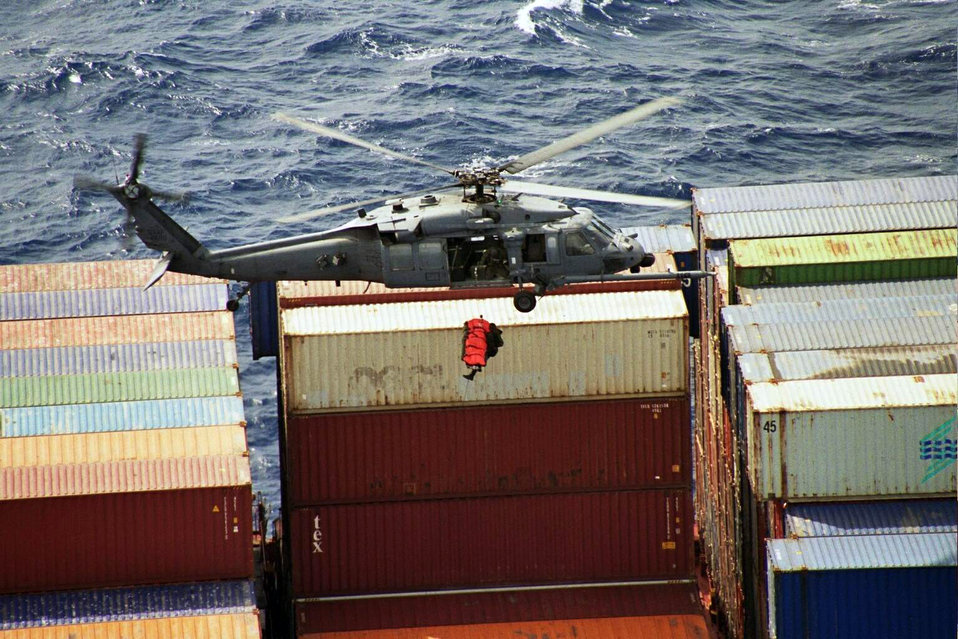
Airmen coordinate joint lifesaving mission off California coast

Pararescuemen from the 131st Rescue Squadron hoist a patient from a cargo container ship into a hovering HH60G Pave Hawk helicopter June 18, 2008. Airmen from the 129th Rescue Wing, based at Moffett Federal Airfield near San Francisco, helped rescue an injured passenger aboard a deep sea fishing vessel 1,400 miles off the coast of California March 31, 2010.